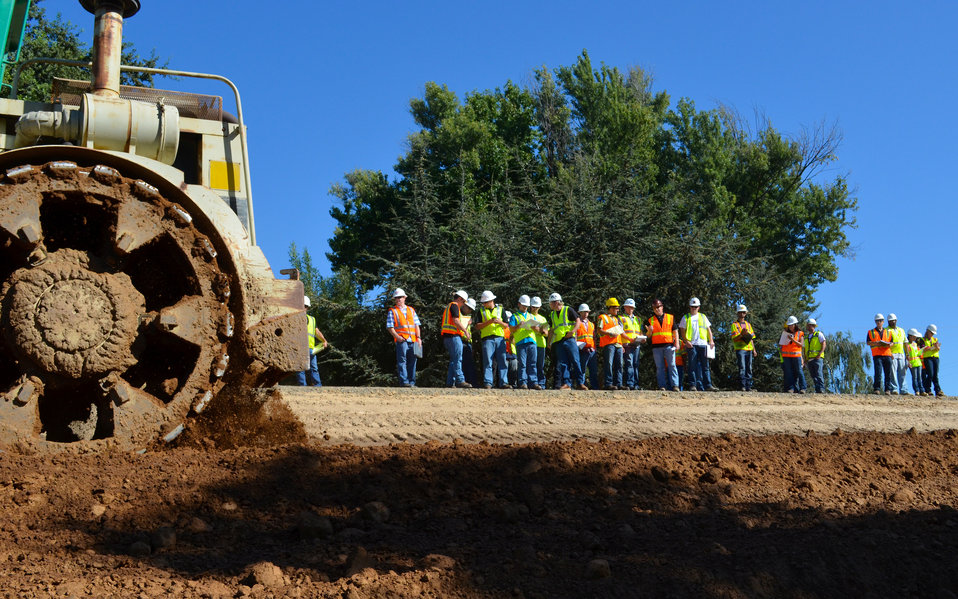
Sacramento State seniors study Howe Ave. levee raise project

Approximately 30 Sacramento State University construction management seniors observe levee construction operations Sept. 7, 2012 at the Corps’ Howe Avenue levee raise project near the American River in Sacramento, Calif.
The class is measuring the time spent removing and delivering levee materials and the types of equipment being used to raise and reinforce more than 4,000 feet of levee by the end of October.
The project is part of the American River Common Features project, a joint flood risk reduction effort between the U.S. Army Corps of Engineers Sacramento District, the state’s Central Valley Flood Protection Board/Department of Water Resources and the Sacramento Area Flood Control Agency.